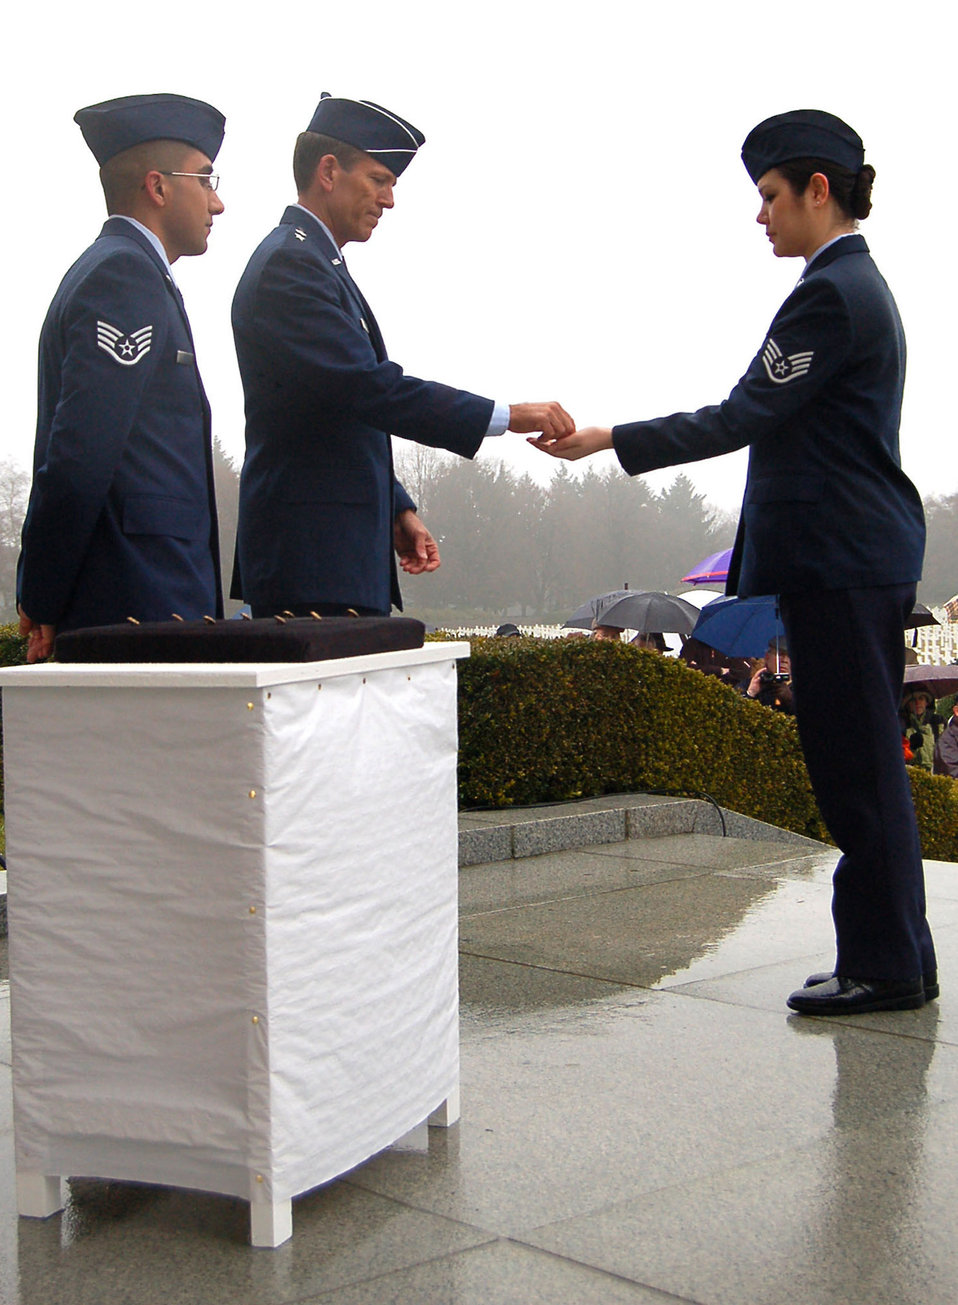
World War II MIAs recovered in Germany

Staff Sgt. Melissa Johnson receives a rosette from Maj. Gen. Thomas B. Wright to place next to Staff Sgt. Walter O. Schlosser's name signifying he is no longer missing in action Feb. 20 at the Henri-Chapelle Cemetery and Memorial in Belgium. Sergeant Johnson works at the NATO Programming Centre's customer service desk, and General Wright is the operations deputy chief of staff of operations for Supreme Headquarters Allied Powers Europe.